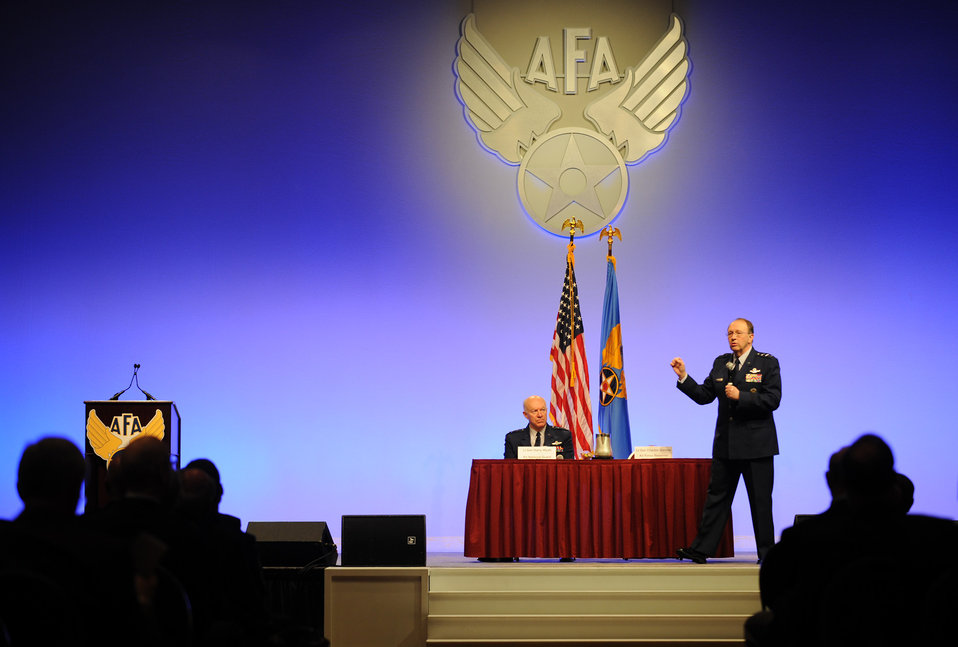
Generals discuss Guard, Reserve, on call Air Force

Lt. Gen. Charles E. Stenner Jr. and Lt. Gen. Harry M. Wyatt III speak about Reserve and Guard components during the Air Force Association's Air Warfare Symposium and Technology Exposition Feb. 19, 2010, at the Rosen Shingle Creek Hotel in Orlando, Fla. General Stenner is the Air Force Reserve Command commander, and General Wyatt is the Air National Guard director.